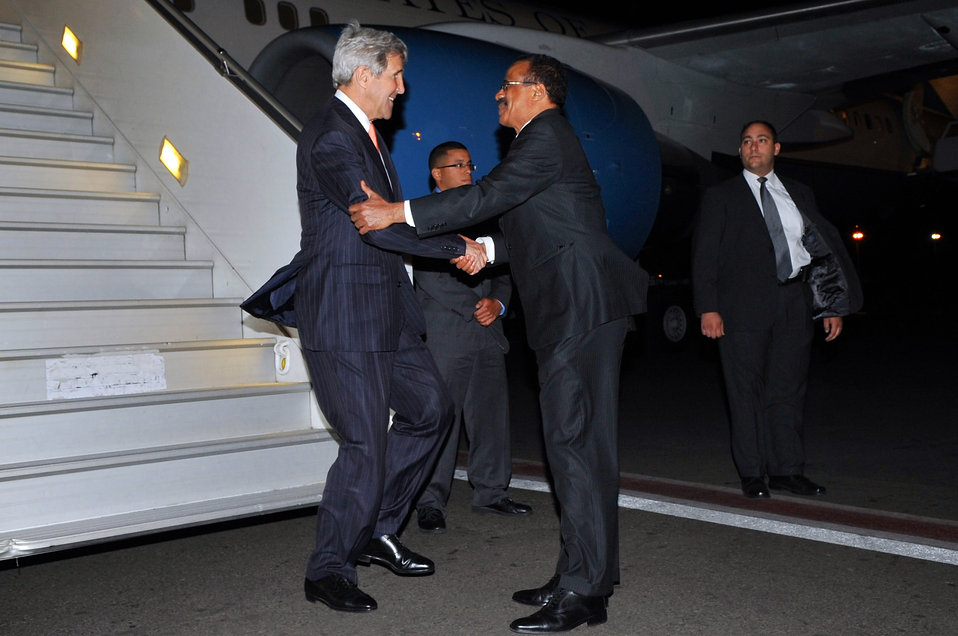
Ethiopian Ambassador Gebre-Christos Welcomes Secretary Kerry to Addis Ababa

Ethiopian State Minister for Foreign Affairs, Ambassador Berhane Gebre-Christos welcomes U.S. Secretary of State John Kerry as he disembarks from his aircraft after arriving in Addis Ababa, Ethiopia, on April 30, 2014, to begin a six-day African tour.